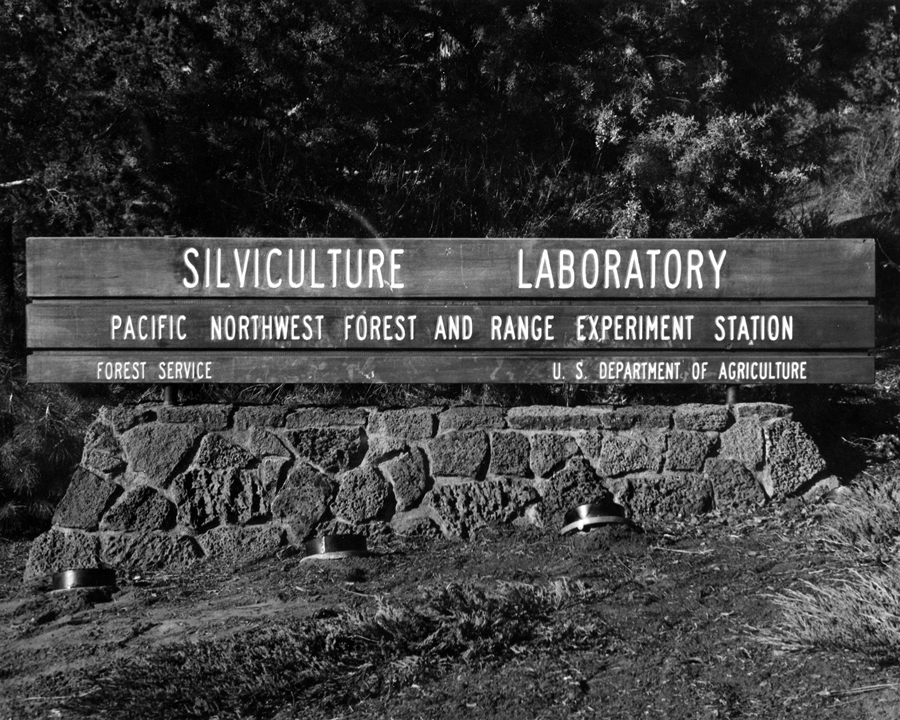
This is an image of the U.S. Department of Agriculture (USDA) U.S. Forest Service Pacific Northwest Forest and Range Experimental Station near Portland, OR.